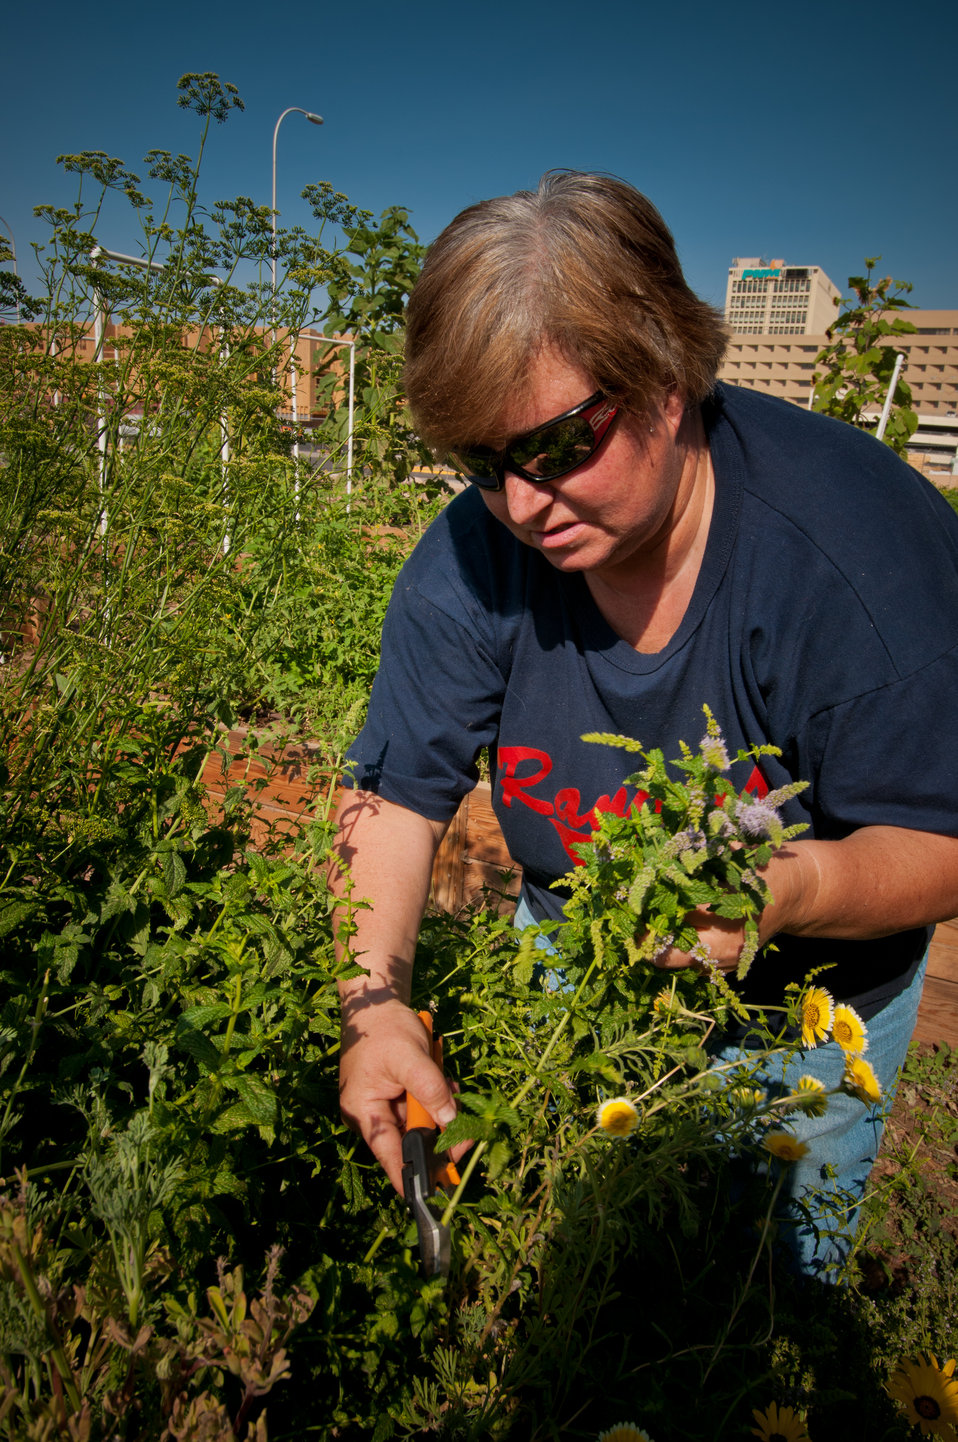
Ronela Zaragoza harvests mint on the La Montanita Co-op Veteran Farm in Albuquerque, NM on Monday, Jun. 11, 2013. The La Montanita Co-op Veteran Farm Project (VFP) funded through the U.S. Department of Agriculture's (USDA) Agricultural Marketing Service (AMS) Specialty Crop Grant program provides veterans workshops on sustainable farming practices, hands-on gardening and farming experience. This collaboration between La Montanita Co-op, Downtown Action Team, the Veteran’s Administration, the New Mexico Department of Agriculture and Holistic Management International provides the initial training for veterans to start or work at sustainable agriculture businesses. VFP grows produce at thier Alvarado Urban Farm in Albuquerque, NM year round. The VFP gardens will supply a stand at the Veterans Affairs (VA) Farmers’ Market once a week over the summer, feed project participants and fill Community Supported Agriculture (CSA) boxes for low-income families in Albuquerque, New Mexico.